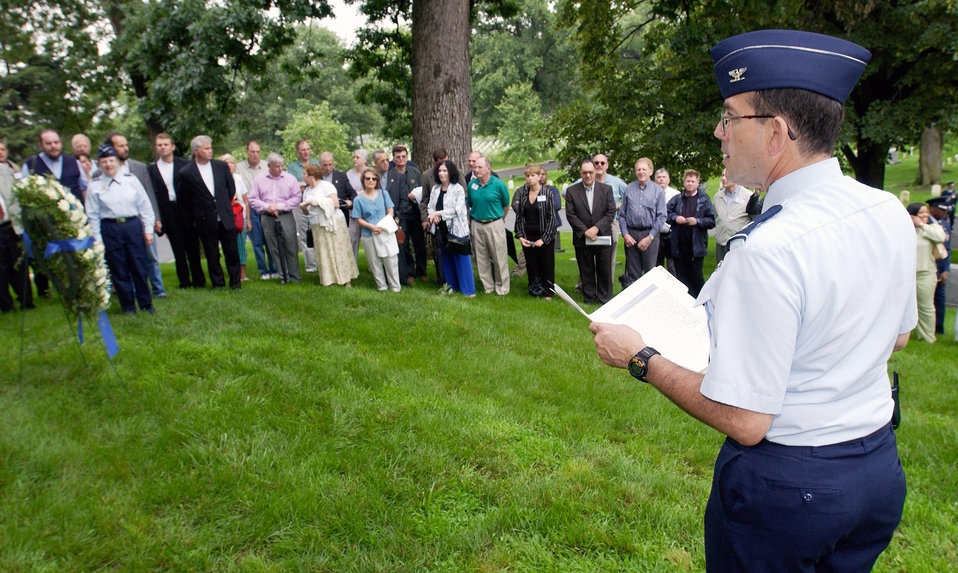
Memorial service

ARLINGTON, Va. (AFPN) -- Chap (Col.) Darrell Morton conducts a memorial and wreath-laying service at Arlington National Cemetery on June 19. The NATO chaplains are in the Washington area for a weeklong NATO Allied Air Force Chief of Chaplains Consultative Conference.